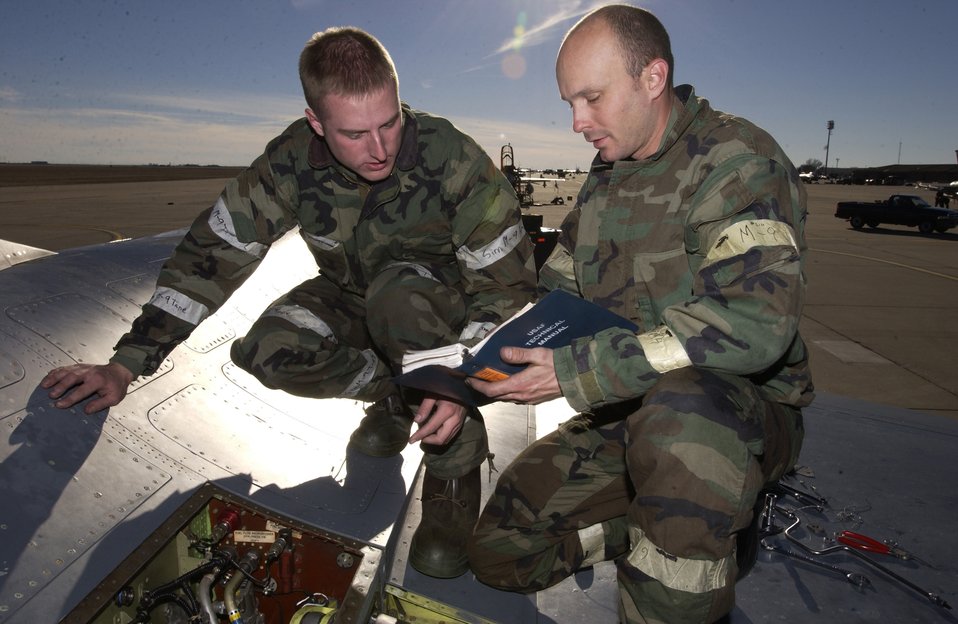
Coronet Roadrunner

CANNON AIR FORCE BASE, N.M. -- Staff Sgts. Aaron Withrow and William Simmons II replace the right flapper on an integrated servo-actuator on an F-16 Fighting Falcon during an exercise here Dec. 2. Both Airmen are assigned to the 27th Aircraft Maintenance Squadron.